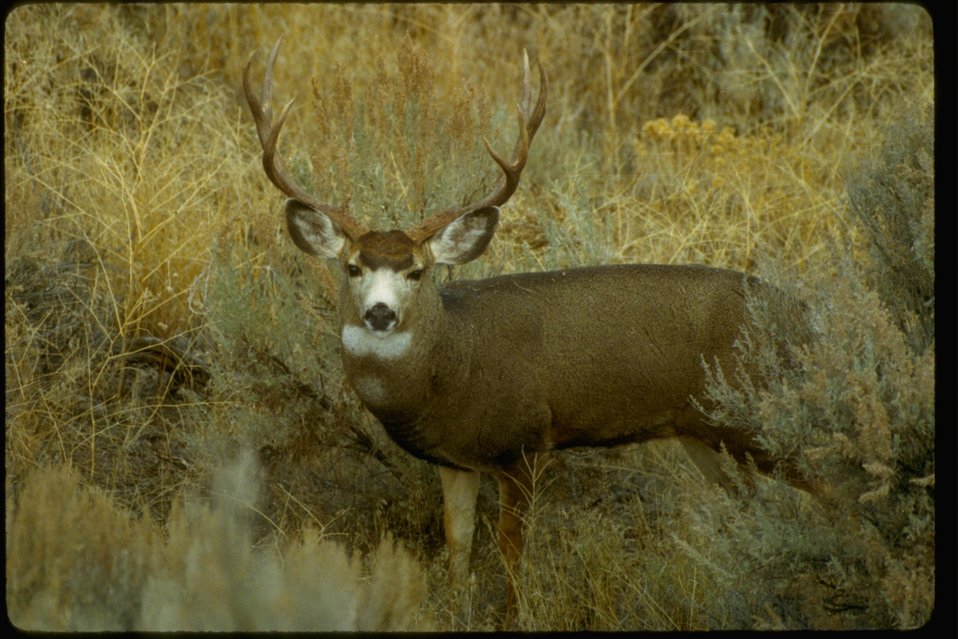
Mule Deer buck in Blitzen Valley near Frenchglen, Oregon.